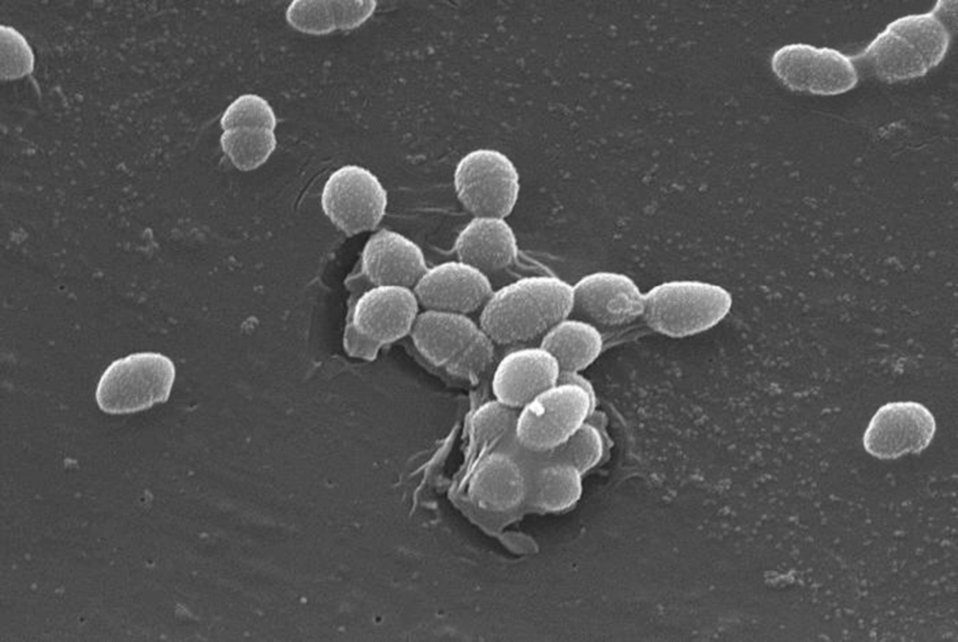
This scanning electron micrograph (SEM) depicts a small group of Gram-positive Enterococcus faecalis bacteria.